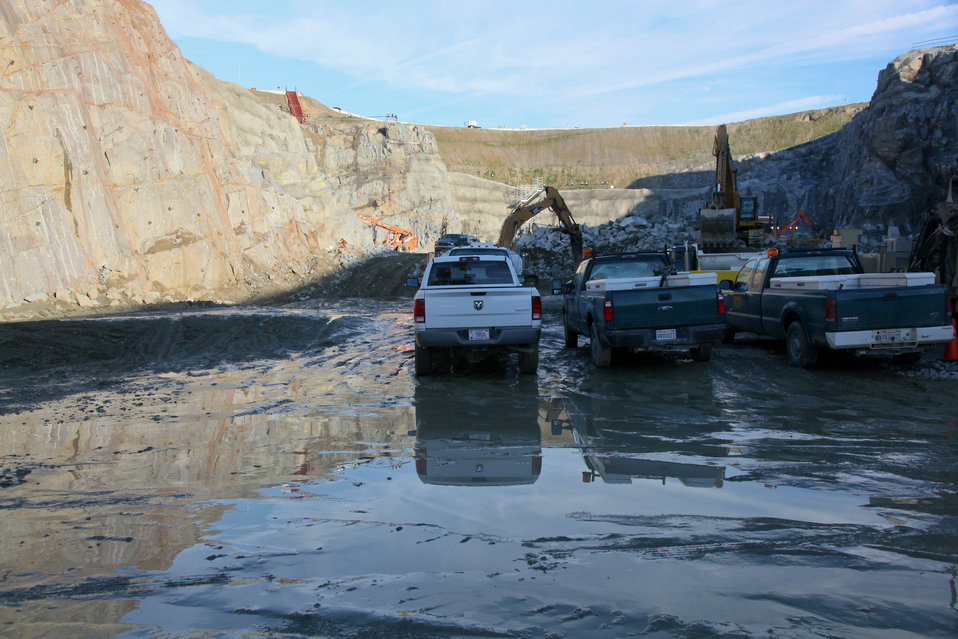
Concrete mixing equipment moves into the Folsom Dam auxiliary spillway

Workers complete the first stage of installing concrete mixing equipment for the new Folsom Dam auxiliary spillway in Folsom, Calif., Jan. 25, 2012. Paving is scheduled to begin in May, said U.S. Army Corps of Engineers Sacramento District project engineer Larry Smith. The spillway will allow Folsom Dam to release water sooner and more safely. The project is part of the Folsom Dam Joint Federal Project, a joint effort of the U.S. Army Corps of Engineers Sacramento District, the U.S. Bureau of Reclamation, the Central Valley Flood Protection Board and the Sacramento Area Flood Control Agency to improve the safety of the dam and reduce flood risk for the greater Sacramento area.